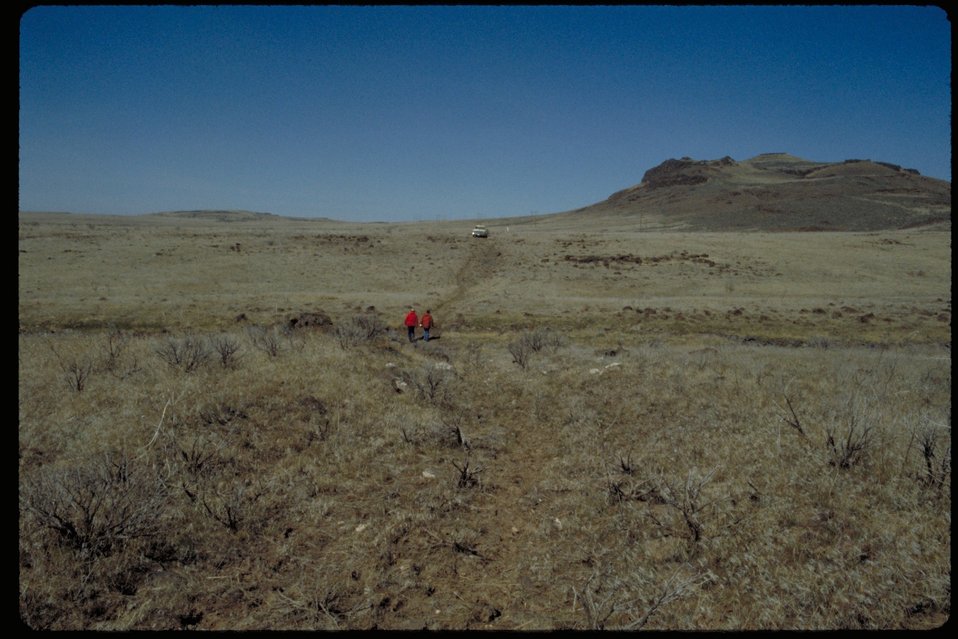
Oregon Trail southeast of Teapot Dome Lower Snake River District